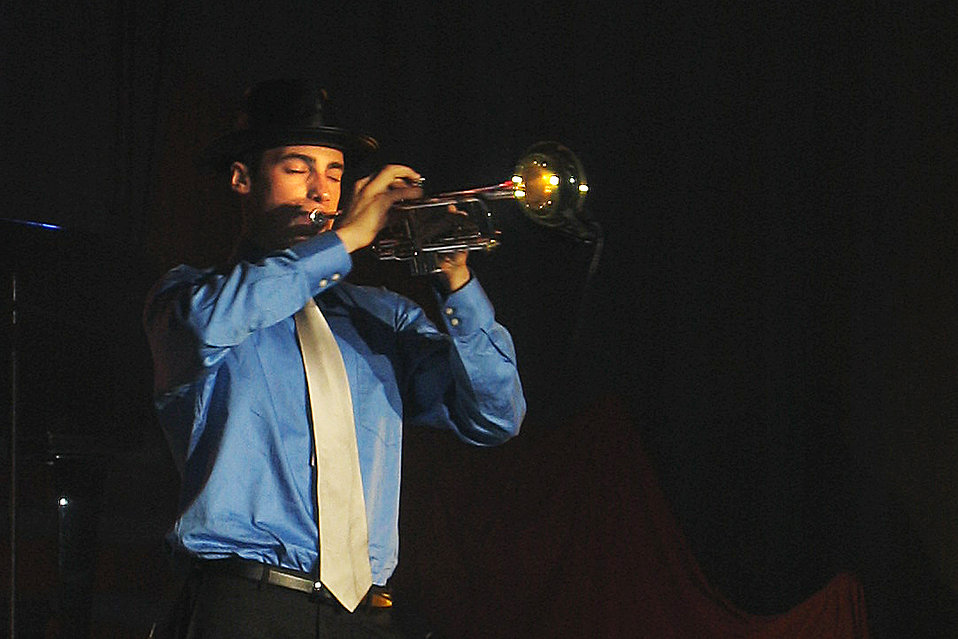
Talent showcase

LACKLAND AIR FORCE BASE, Texas -- Airman Joshua Phipps plays a trumpet March 19 during the 2004 Air Force Worldwide Talent Contest here. He competed against about 70 contestants for a shot at joining the 2004 Tops in Blue tour. Airman Phipps is from Beale Air Force Base, Calif.